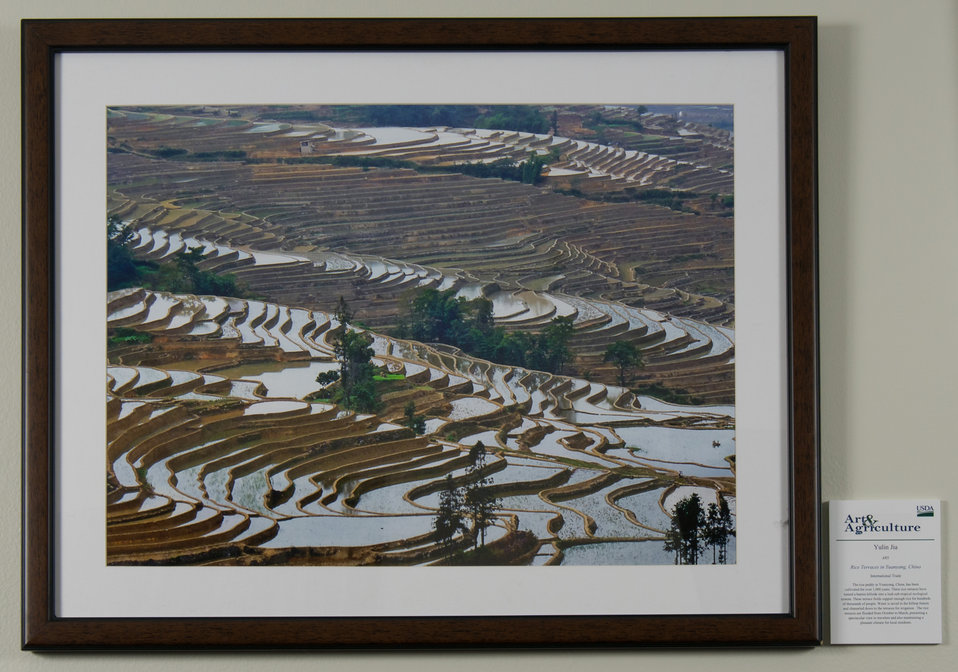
Online Viewer's Choice entries of the 2013 Art & Agriculture, Tuesday, July 9, 2013, in the South Building, Washington, D.C. Themes were expressed by employees from across the department and the contest was open to full-time and part-time USDA employees. Winning artwork will be displayed till the end of the year. U.S. Artistic expression is a creative outlet that is vital for an individual to grow and develop.